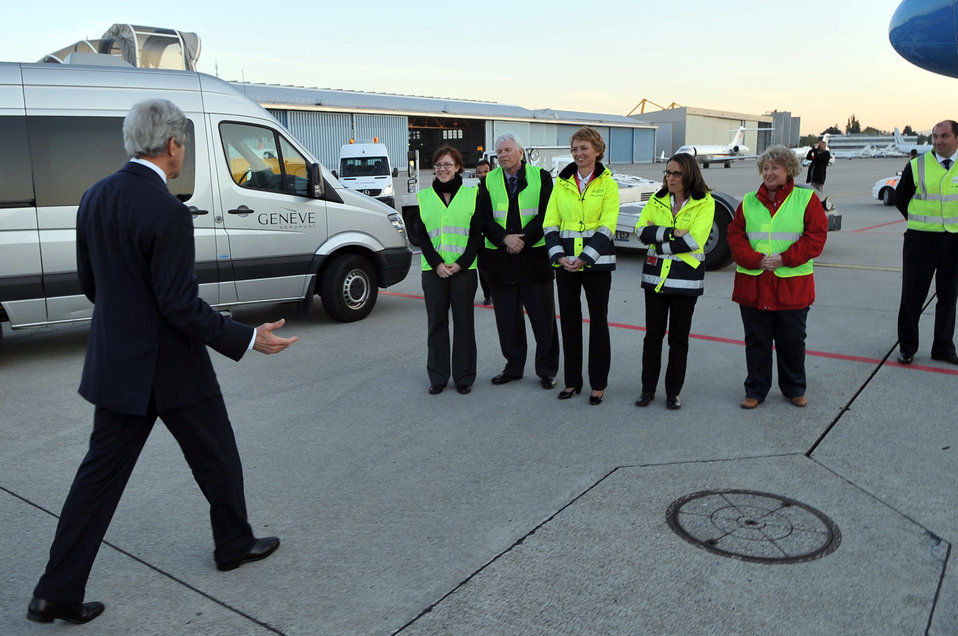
Secretary Kerry Greets Ramp Workers Before Departing Geneva International Airport

U.S. Secretary of State John Kerry greets ramp workers at the Geneva International Airport in Switzerland, on April 17, 2014, after concluding meetings with Russian, Ukrainian, and European Union officials about Ukraine.